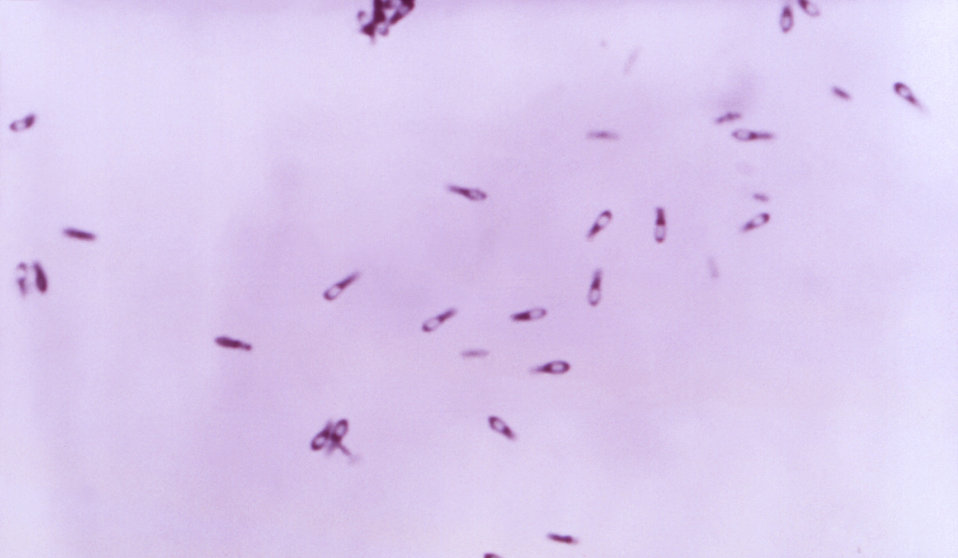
Magnified 956X, this Gram-stained photomicrograph depicted numbers of the Gram-positive Clostridium subterminale bacteria, which had been cultivated on a blood agar plate (BAP), over a time period of 48 hours.